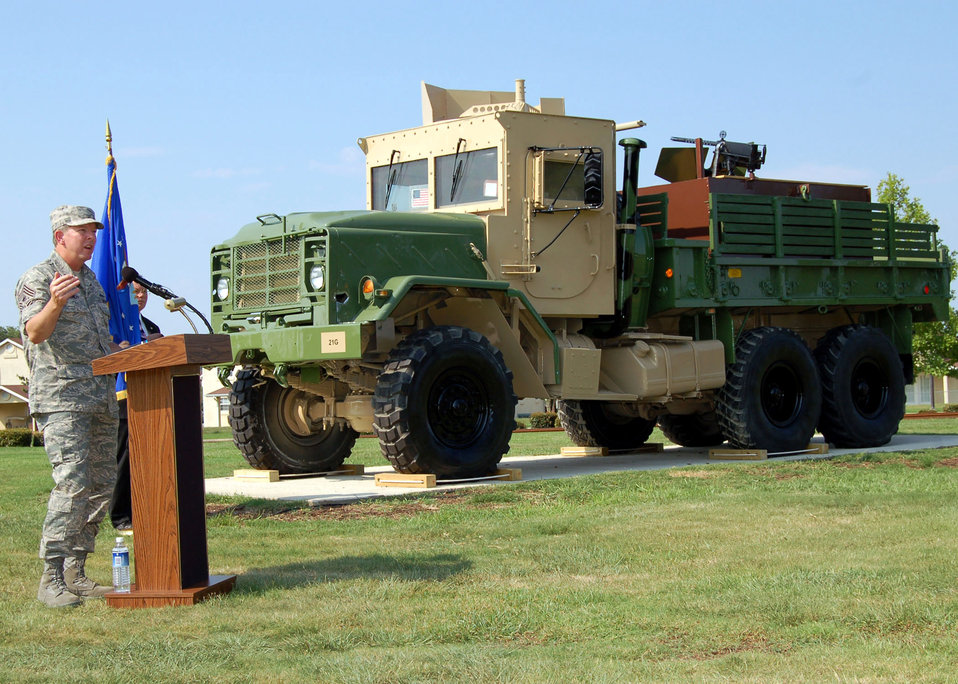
Dedication recognizes Airmen who deliver under fire

Chief Master Sgt. of the Air Force Rodney J. McKinley speaks during a ceremony July 23 to dedicate an Air Force convoy gun truck that was decommissioned after an Improvised Explosive Device (IED) attack in Iraq that made the vehicle inoperable. The chief and 300 other senior enlisted leaders at the Senior Enlisted Leader Summit attended the event.